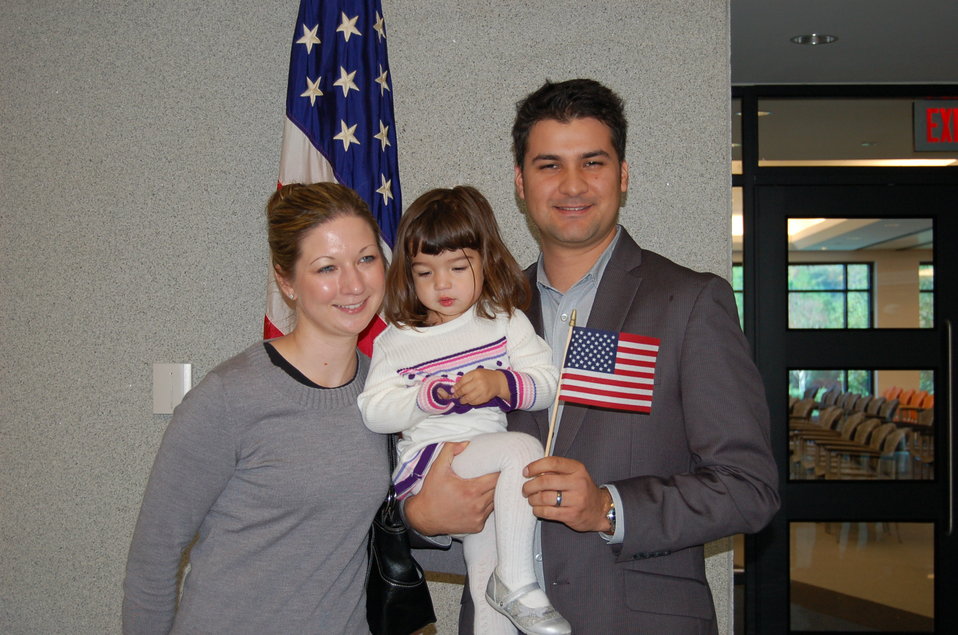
New Citizens